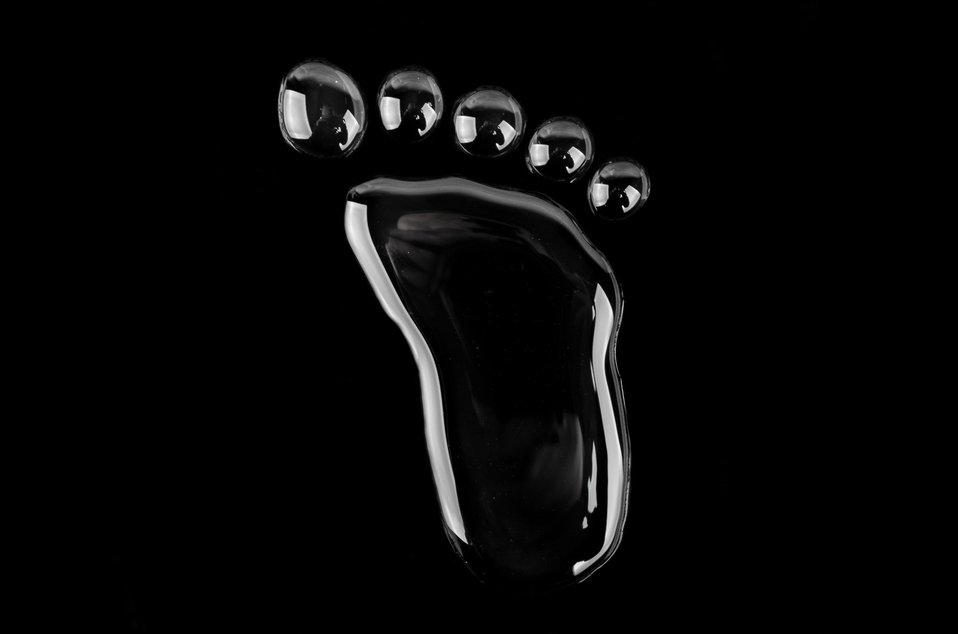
Footprint

The footprint made up of water on a black background.